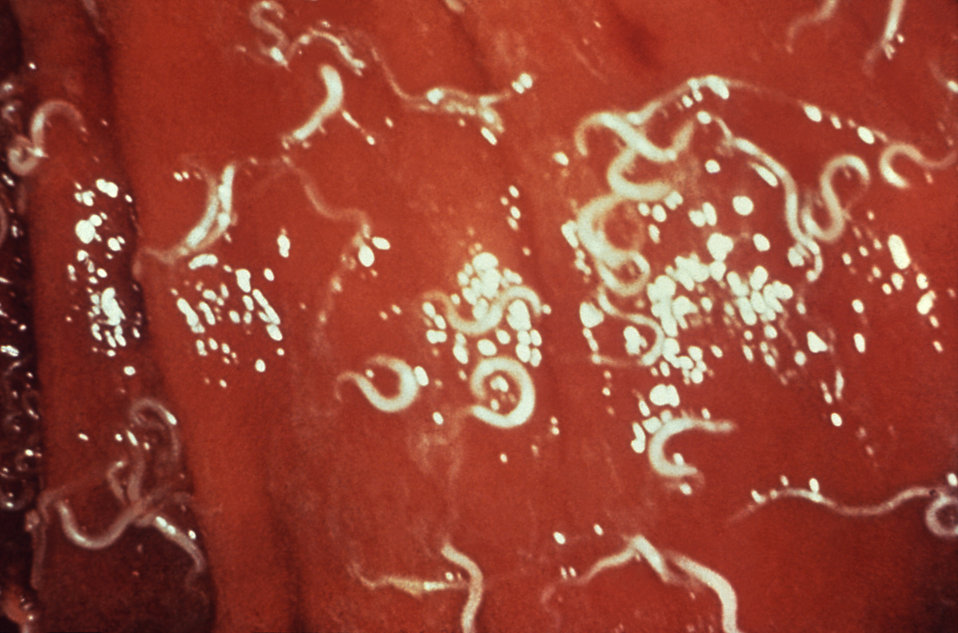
This is a close view of the intestinal mucosa in the case of a patient who'd been infested with the human whip worm, Trichuris trichiura The parasitic disease is known as trichuriasis.